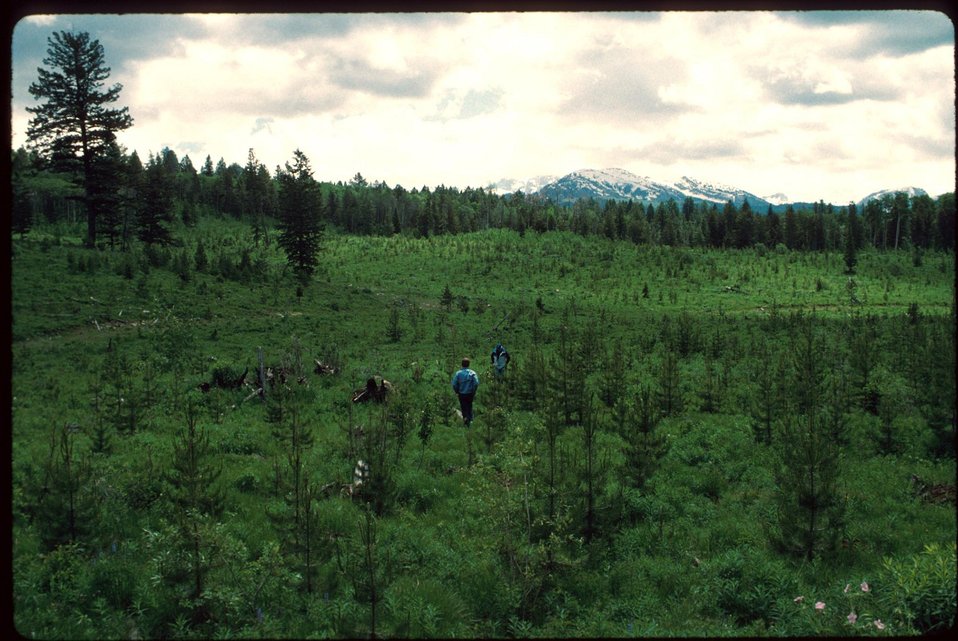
Dry Ridge Plantation Medicine Lodge, Idaho Falls Upper Snake River District